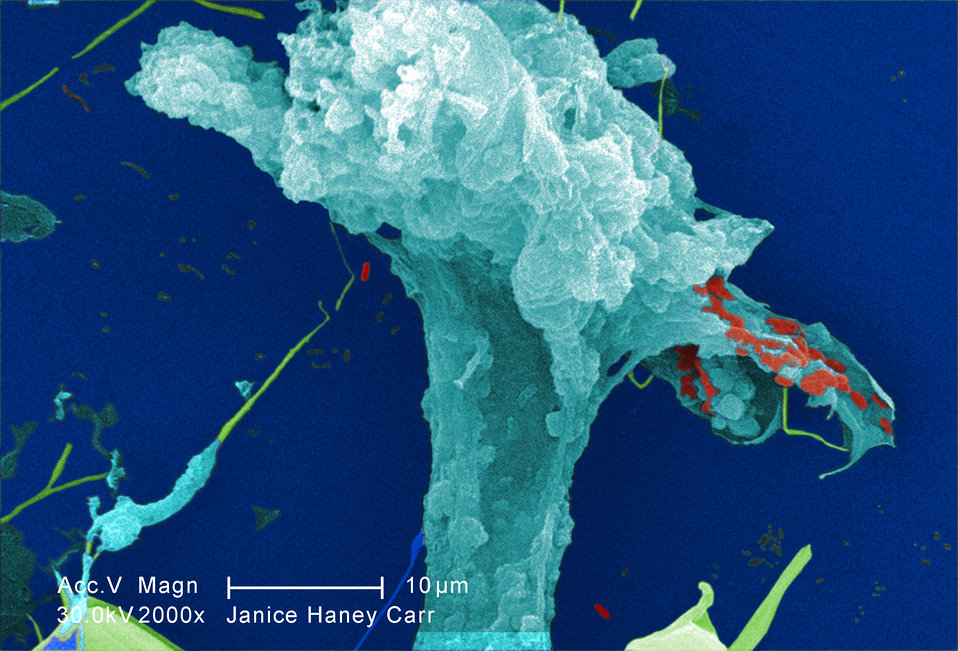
At a magnification of 2000X, this digitally-colorized scanning electron micrograph (SEM) of an untreated water specimen extracted from a wild stream, which is mainly used to control flooding during inclement weather, revealed the presence of unidentified organisms, which included bacteria, protozoa, and algae. In this particular image, an expanding amorphous organic biofilm was featured.